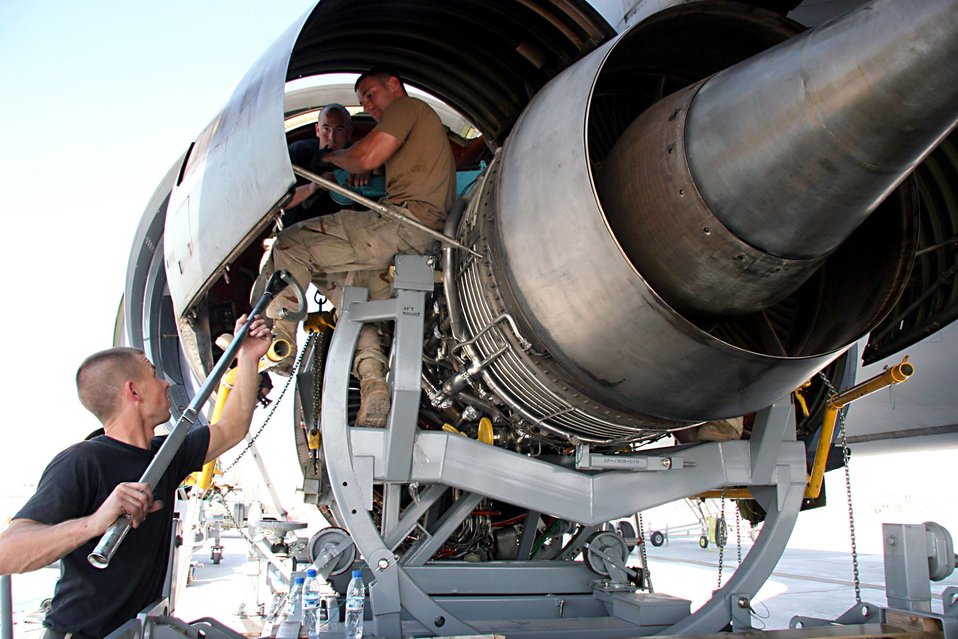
Desert KC-10 Engine Change

Staff Sgt. Kevin Brown hands Staff Sgt. Jamie Sherwood a torque wrench as Staff Sgt. Joseph Dodson stands by to complete the installation of a replacement engine on a KC-10 Extender Nov. 23. It took a maintenance team two days to remove the old engine and install the new engine. The sergeants are with the 380th Expeditionary Aircraft Maintenance Squadron at an air base in Southwest Asia.